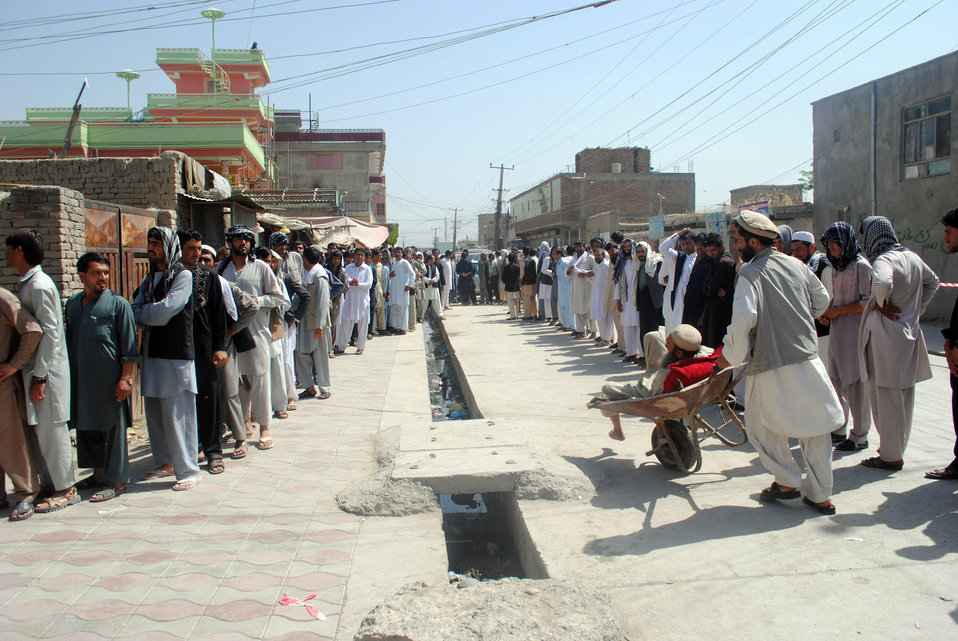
A man who is not able to walk is taken to a voter station in handcart in ninth police district in Kabul.